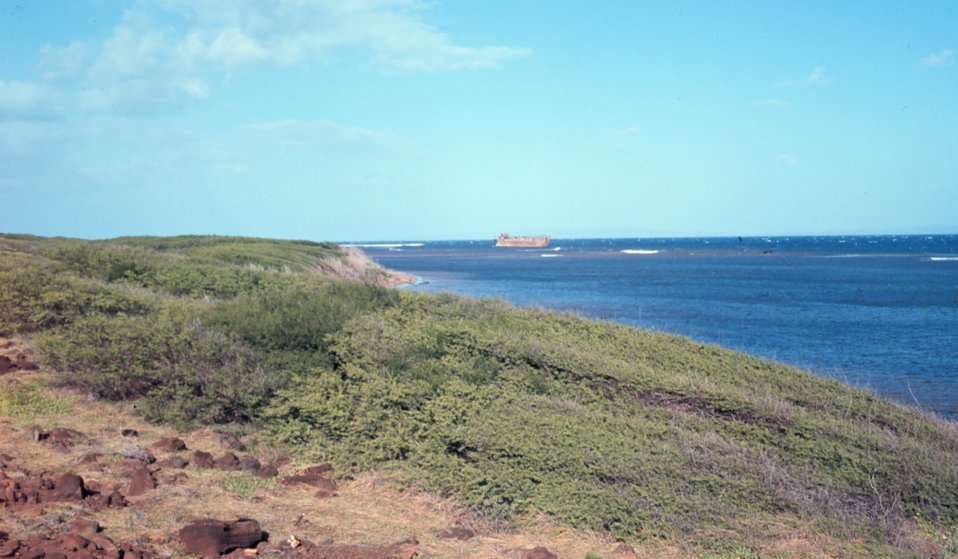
Shipwreck Beach